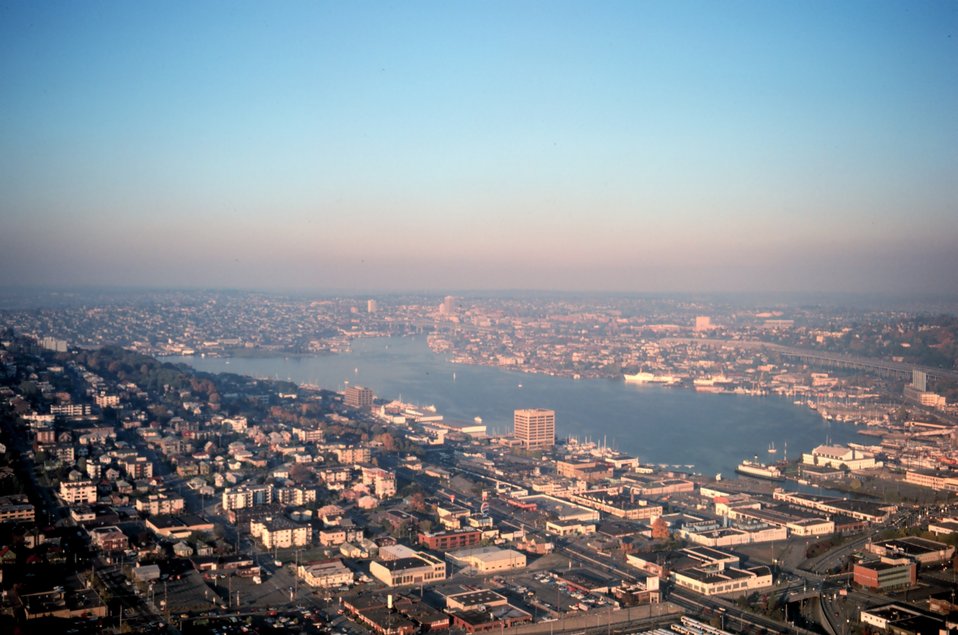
Lake Union from the Space Needle. NOAA ships in port moored at Pacific Marine Center.